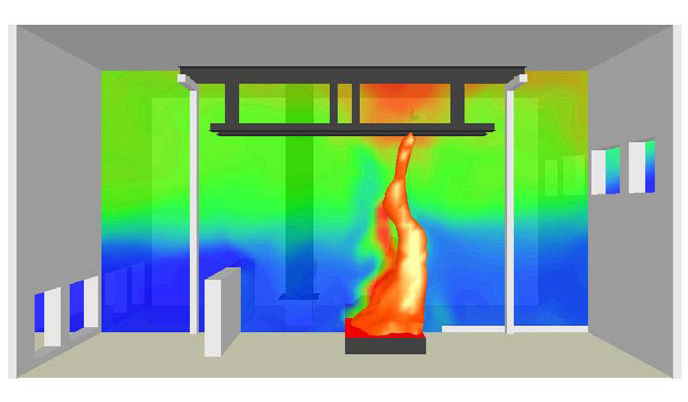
Structural Fire Resistance

Computer simulation based on a NIST fire test conducted during the investigation of the collapse of the World Trade Center towers. Image shows flames impacting a model of a WTC steel floor truss without any fire-resistant insulation. Colors in the simulation show the variation in gas temperatures.